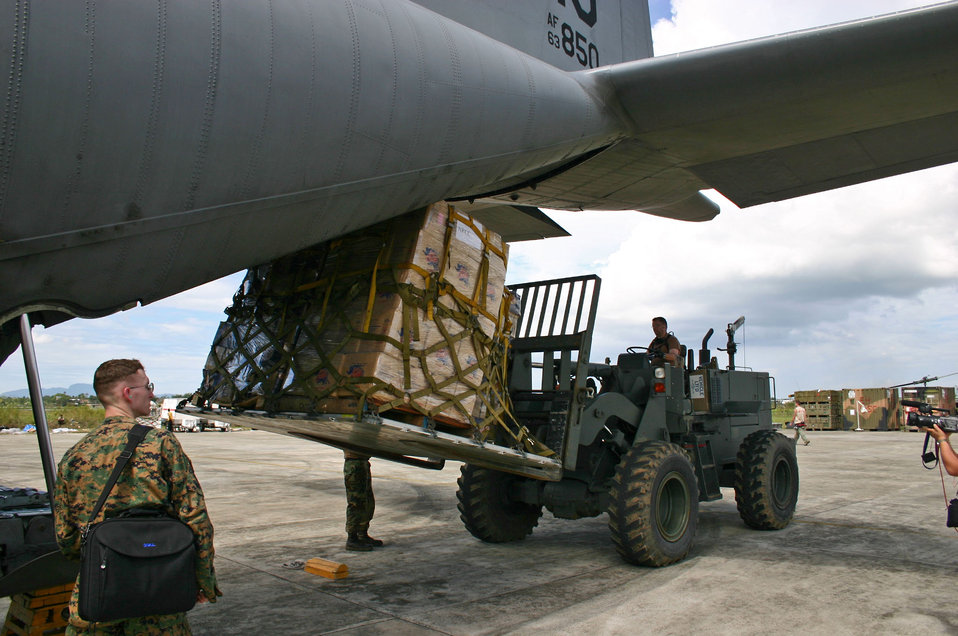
Relief supplies brought to Banda Aceh

BANDA ACEH, Indonesia -- A pallet of water is unloaded from a C-130 Hercules here Jan. 10. More than 18,000 Marines, Sailors, Airmen, Soldiers and Coast Guardsmen with Combined Support Force 536 are working with international militaries and nongovernmental organizations to aid the affected people of Thailand, Sri Lanka and Indonesia after a magnitude 9.0 earthquake Dec. 26 triggered devastating tsunamis. International efforts to minimize suffering and mitigate loss of life continue as the CSF 536 servicemembers provide humanitarian assistance supporting Operation Unified Assistance.